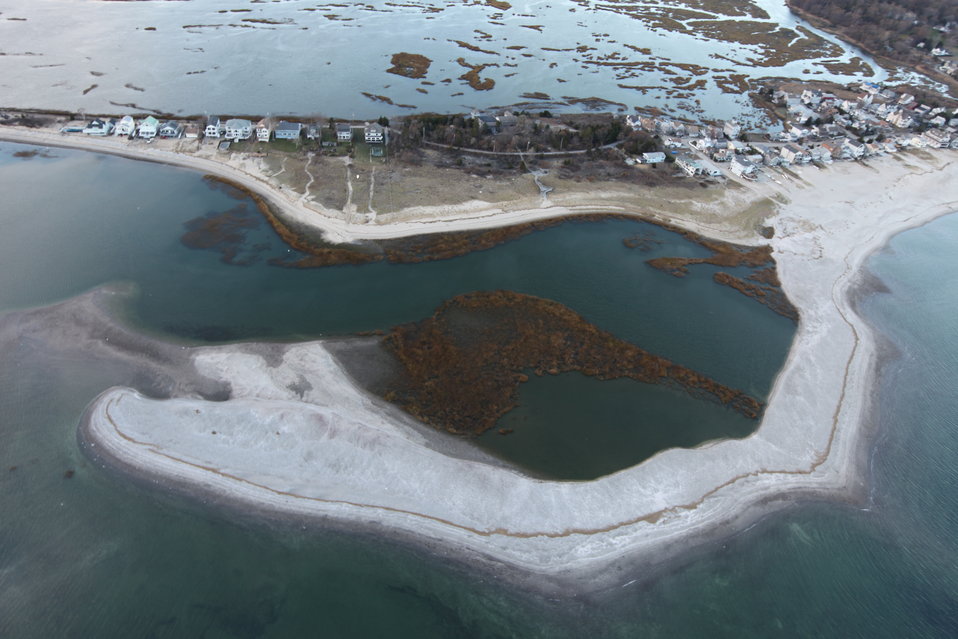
Stewart B. McKinney National Wildlife Refuge-Milford Point (CT)

Aerial view of Milford Point in the aftermath of storm Sandy.